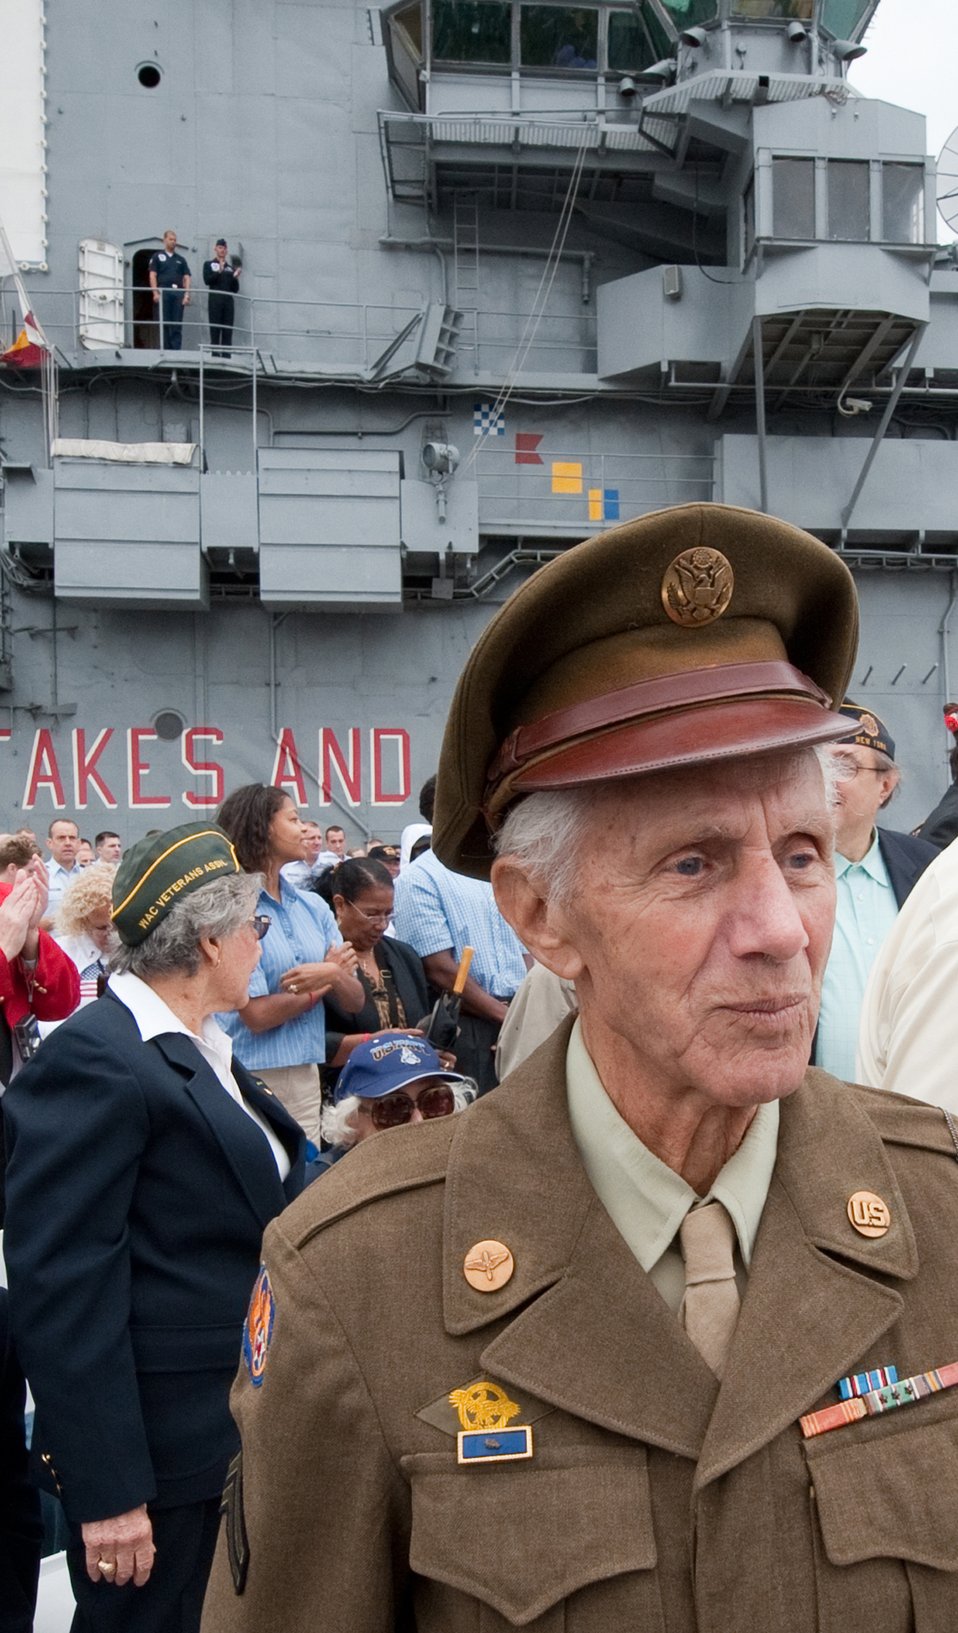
Opening ceremony for Air Force Week

Frank Milano (foreground) stands at attention during part of the Air Force Week New York City proclamation ceremony Aug. 24, 2010, at the USS Intrepid Sea, Air and Space Museum. Mr. Milano was a corporal in the Army Air Force, and stationed in Europe with 9th Air Force during World War II.